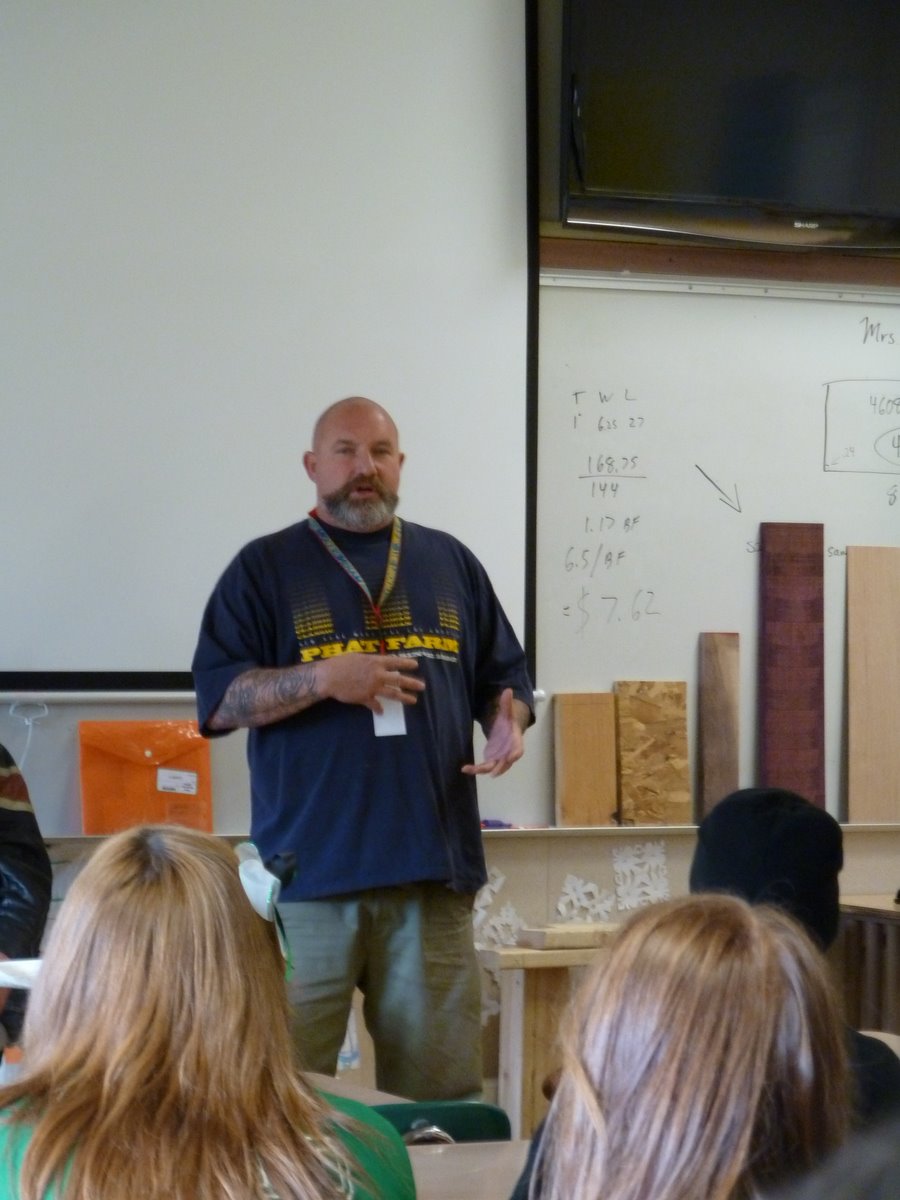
Siskiyou County, CA Drug Facts Week Photos

David talks about his path toward recovery with Siskiyou students. He has abstained from drugs and alcohol for two year now and he is working toward a degree.